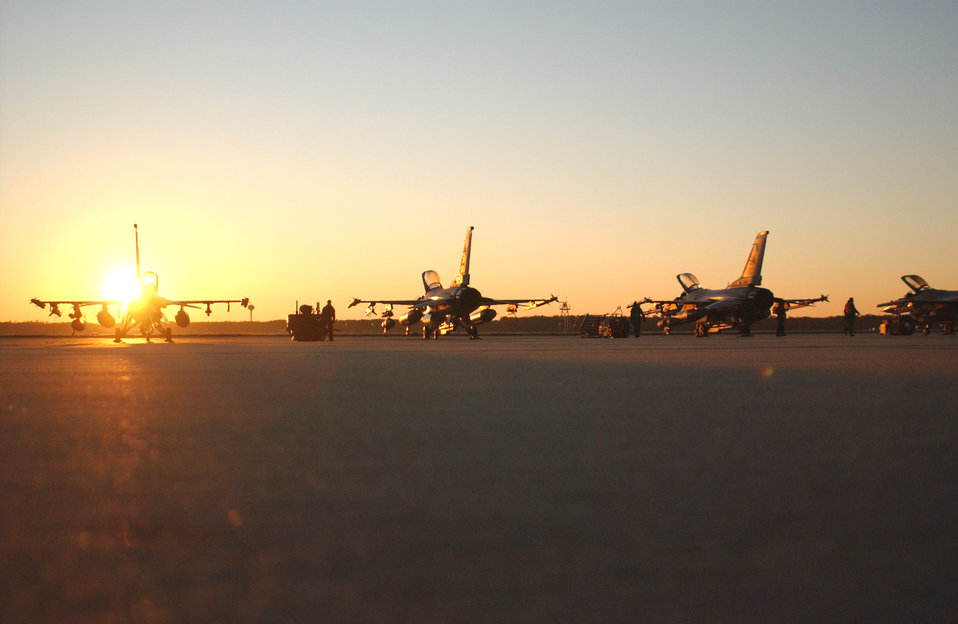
Exercising Falcons

F-16 Fighting Falcons assigned to the 20th Fighter Wing sit on a ramp awaiting generation in support of Operational Readiness Exercise Sea Lion 07-03 Jan. 26 at Shaw Air Force Base, S.C. Exercises prepare Airmen for future deployments. Shaw AFB is home to the Air Force?s largest combat F-16 wing -- the 20th FW -- whose mission is to provide, project and sustain combat-ready air forces.